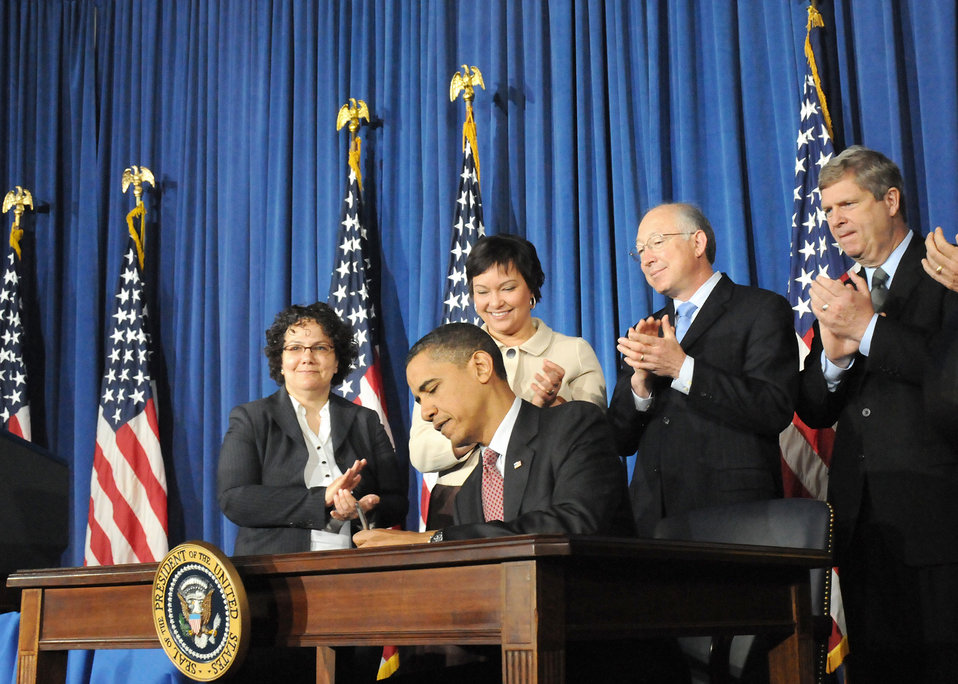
President Barack Obama signs a memorandum of understanding (MOU) for agency cooperation on conserving America's Great Outdoors. (Standing behind President L to R) Council on Environmental Quality Chair Nancy Sutley, Environmental Protection Agency Lisa Jackson, Interior Secretary Ken Salazar, and Agriculture Secretary Tom Vilsack. The event took place at the Department of Interior in Washington, D. C. on April 16, 2010. USDA photo 10di1316-228